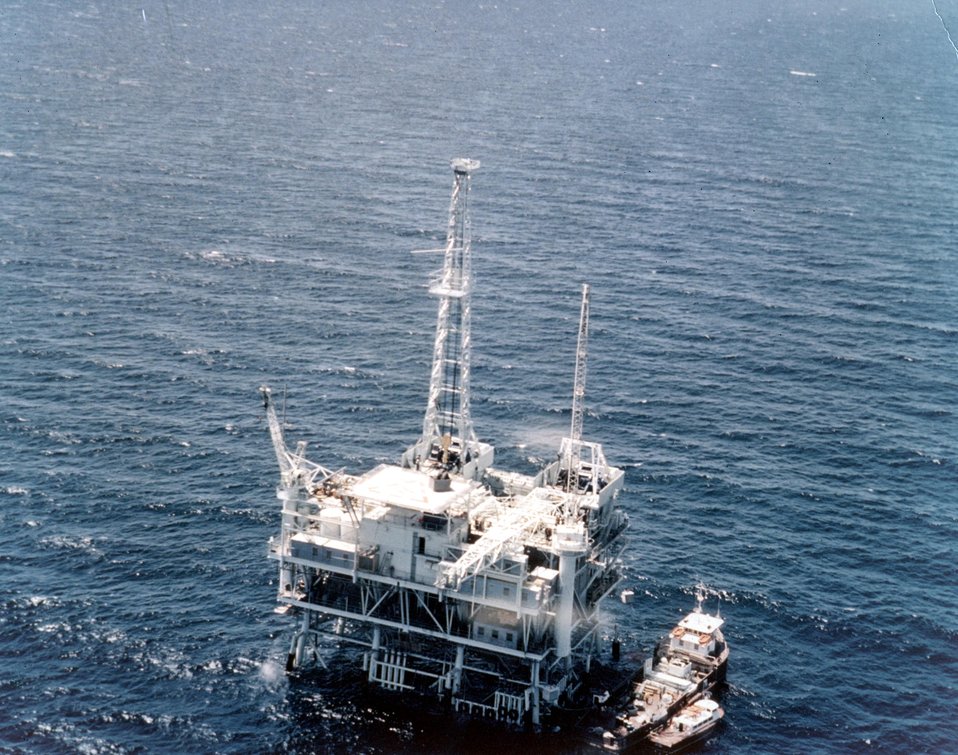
Offshore drilling, Santa Barbara Channel. c. undated